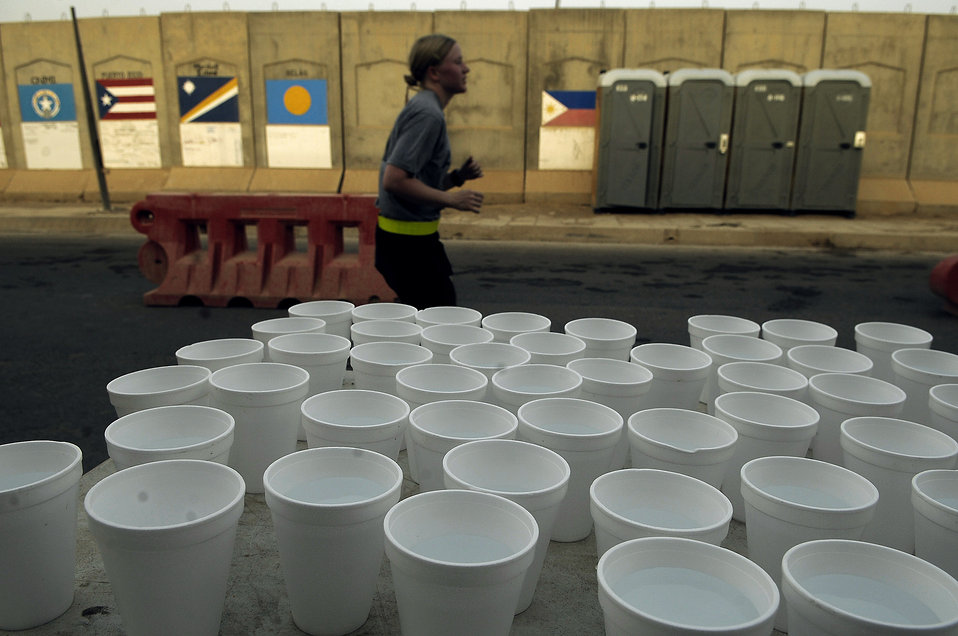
Servicemembers take part in Baghdad Boilermaker

More than 240 deployed servicemembers from around the Victory Base complex participate in the Baghdad Boilermaker 15-kilometer race June 13 at Sather Air Base, Iraq. The race was organized by Master Sgts. James Carrabba and Jeffrey Conant who have both participated in the Utica, N.Y., Boilermaker for years.